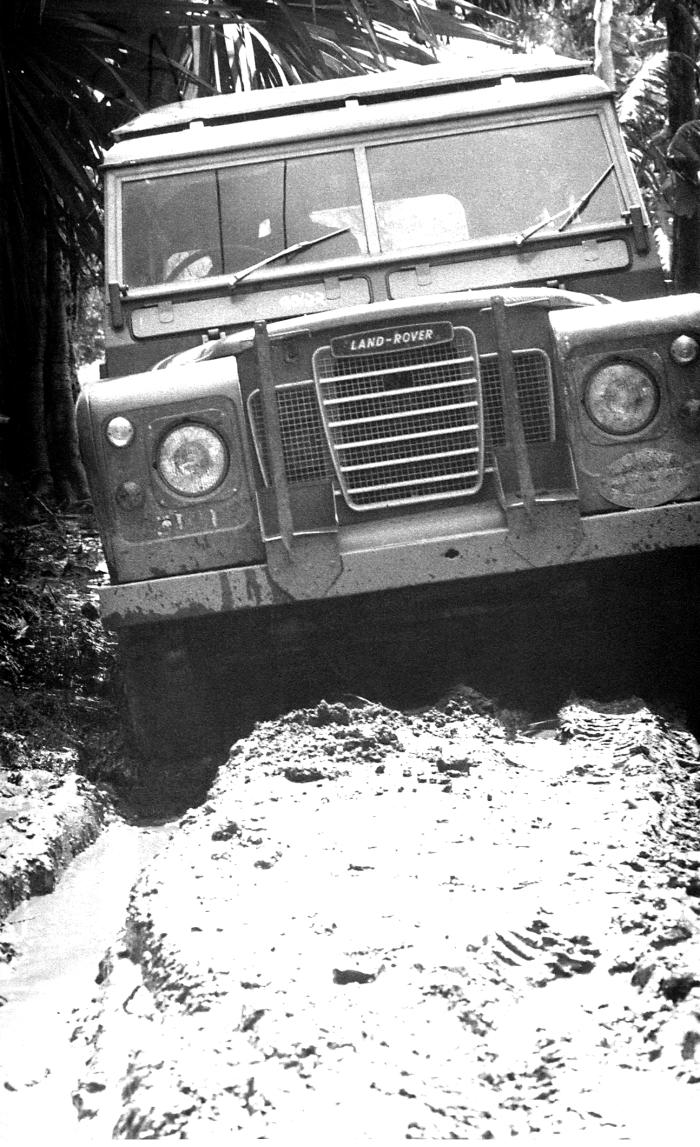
This photograph, by Pierre Claquin, M.D., B.A.C., who at the time was a member of the World Health Organization's Smallpox Eradication Program, was provided by former E.I.S. officer, Stanley O. Foster M.D., M.P.H., and was one of a series entitled 'The Story of One Smallpox Jeep', which depicted the travails faced by the jeep, and its occupants of public health practitioners, as they road through the Bangladesh countryside in an attempt to eradicate smallpox from the country.